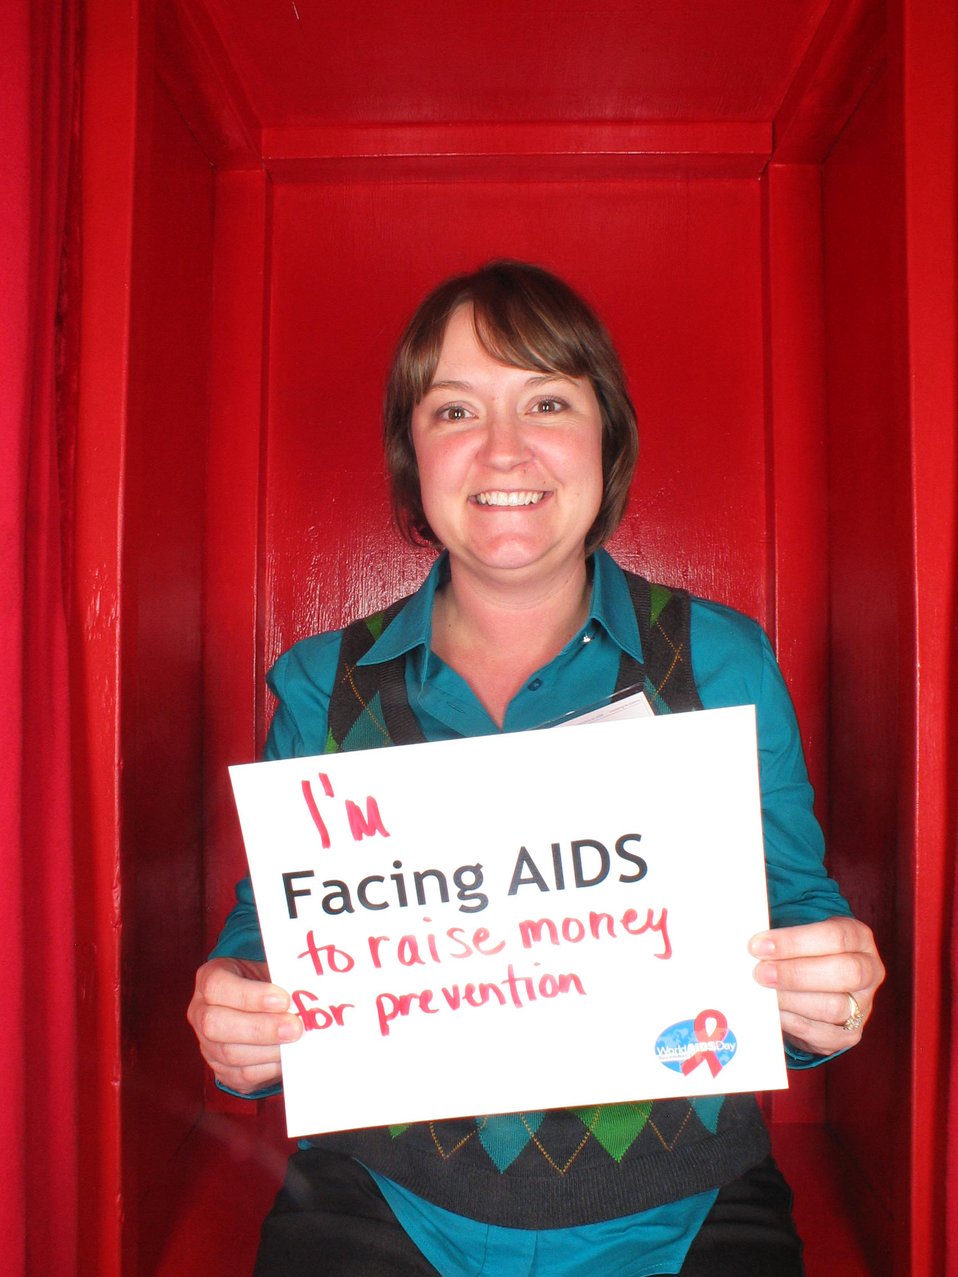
I'm Facing AIDS to raise money for prevention